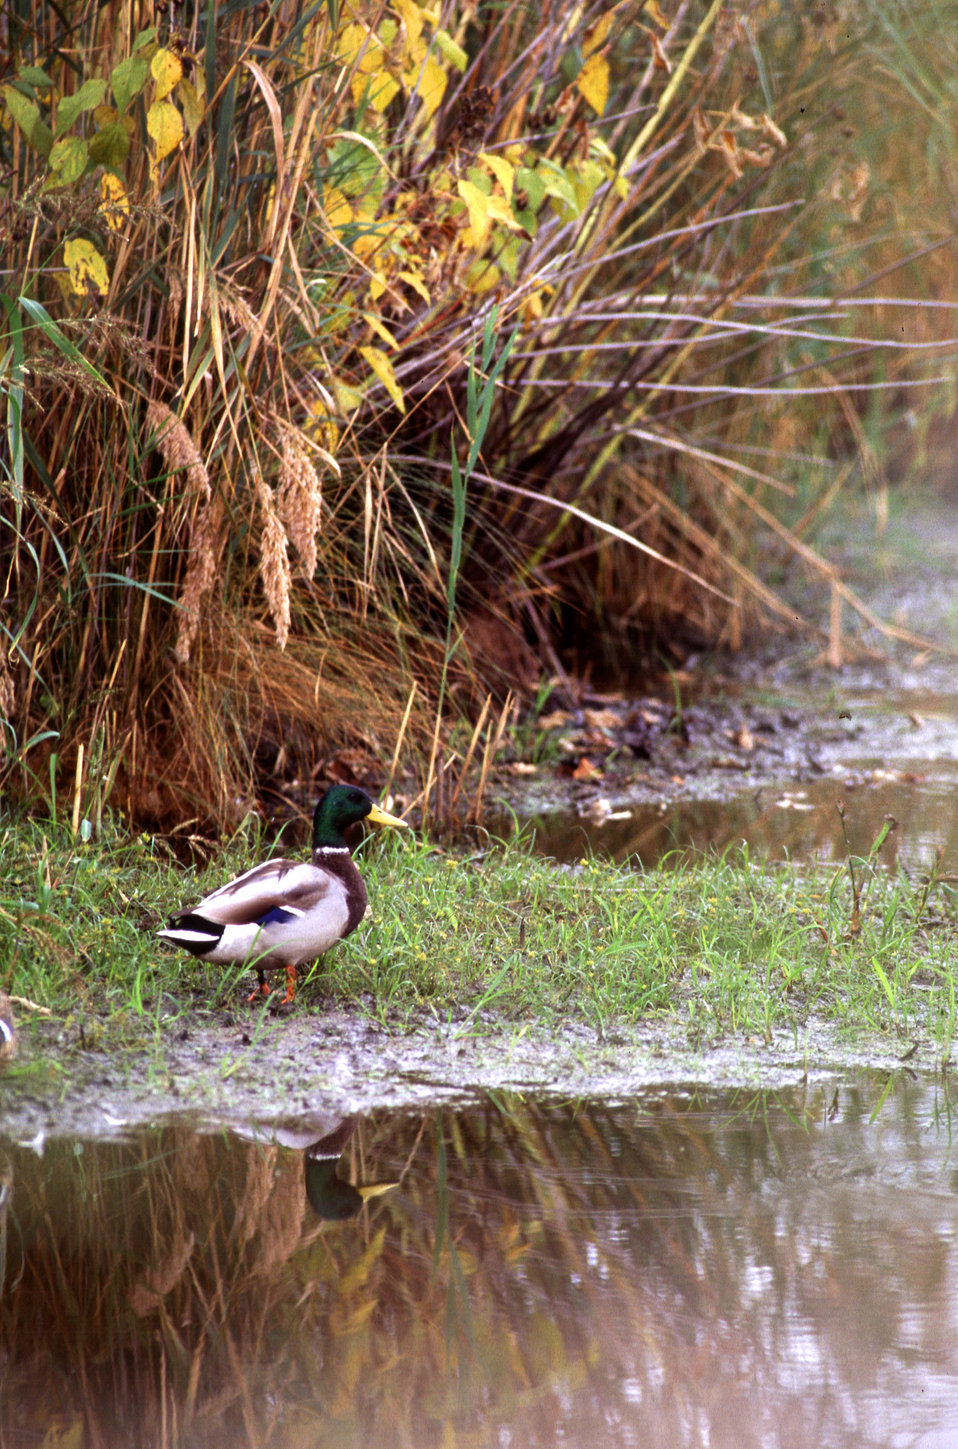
A male mallard walks on a vegetation buffer beside a stream. Wetland and streamside vegetation serves as a buffer to filter excess nutrients from water running off agricultural land.